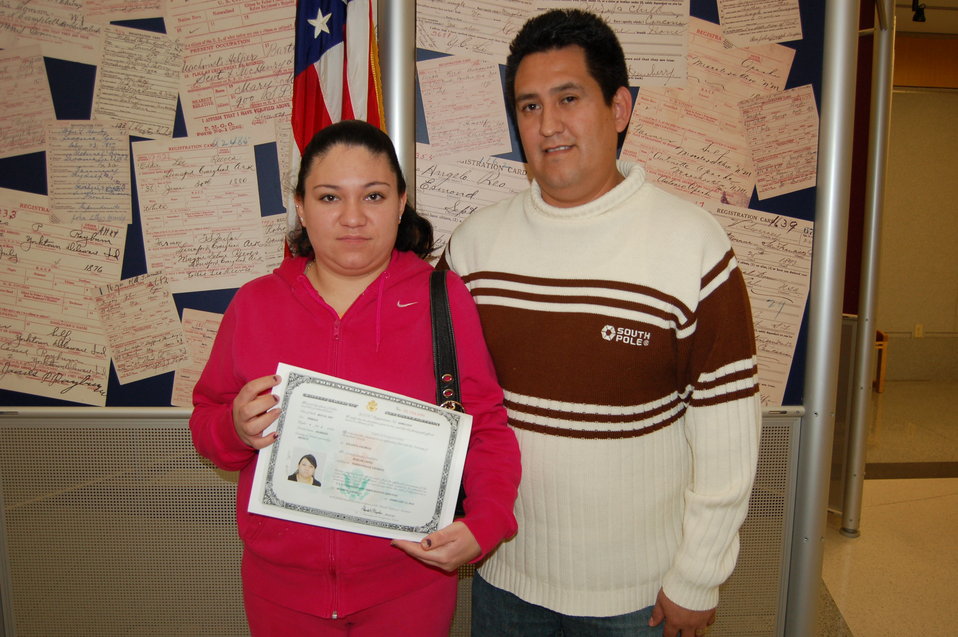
New Citizens